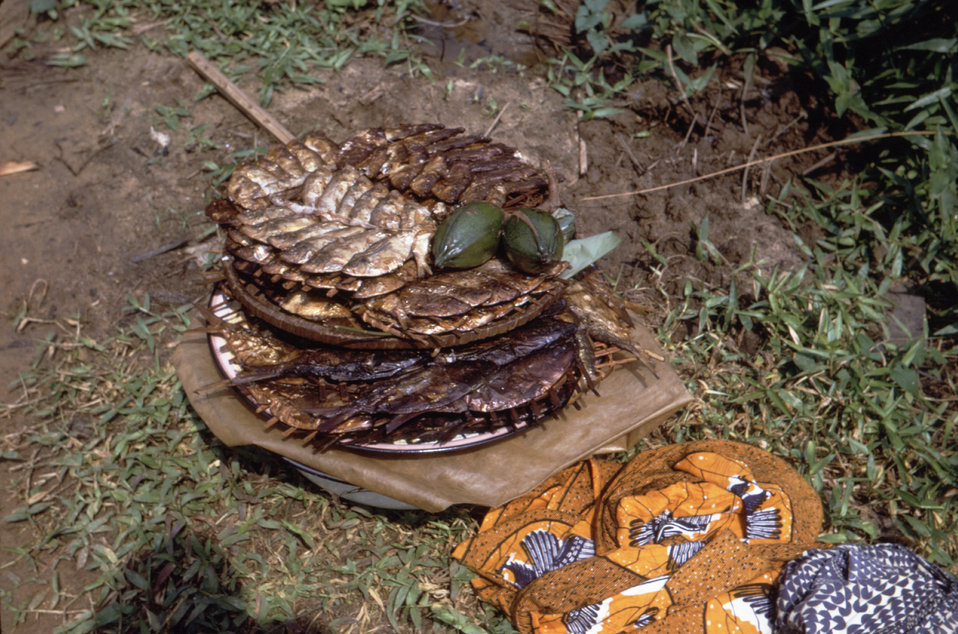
This photograph showed locally caught fish being dried and smoked before being distributed in a Nigerian refugee relief camp in the late 1960s during the Nigerian-Biafran civil war.